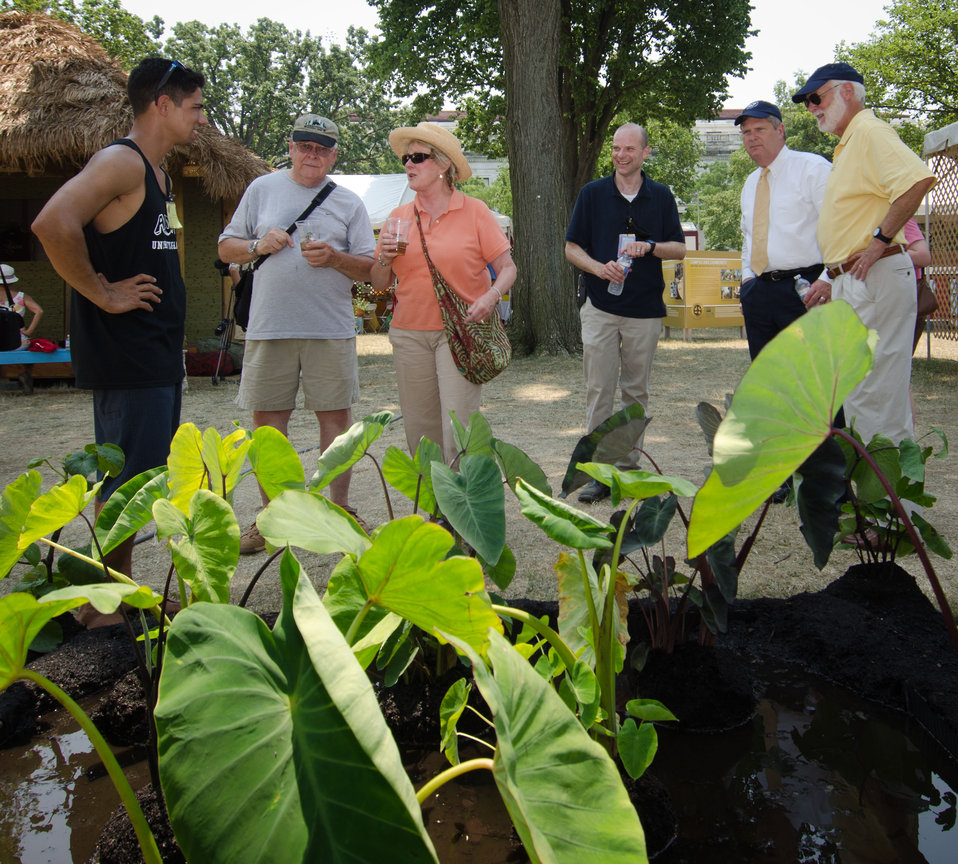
Smithsonian Institution’s Stephen Kidd, Agriculture Secretary Tom Vilsack, and Smithsonian Institution Secretary G. Wayne Clough observe outreach activity as University of Hawaii Assistant Education Specialist Kaulana Vares (left) talks to visitors as about the demonstration garden of taro, a culturally significant plant of Hawaii, during the 2012 Smithsonian Folklife Festival, on the National Mall in Washington, D.C. on Friday, June 29, 2012 Near by is the Mississippi State University Mobile Veterinary Clinic that serves the Northern Mississippi area by providing Spay and neuter services to those in need, and provides medical experience for students. One of the three themes this year is “Campus and Community.” It celebrates the 150 years of the USDA and the Land-Grant University System. The U.S. Department of Agriculture (USDA) and the Land-Grant system extend education across the country, contributing to American agriculture success and rural prosperity. “Campus and Community” has demonstrations, discussions, hands-on activities, and entertainment to that showcase the many ways that this partnership works to improve American agriculture and rural life.